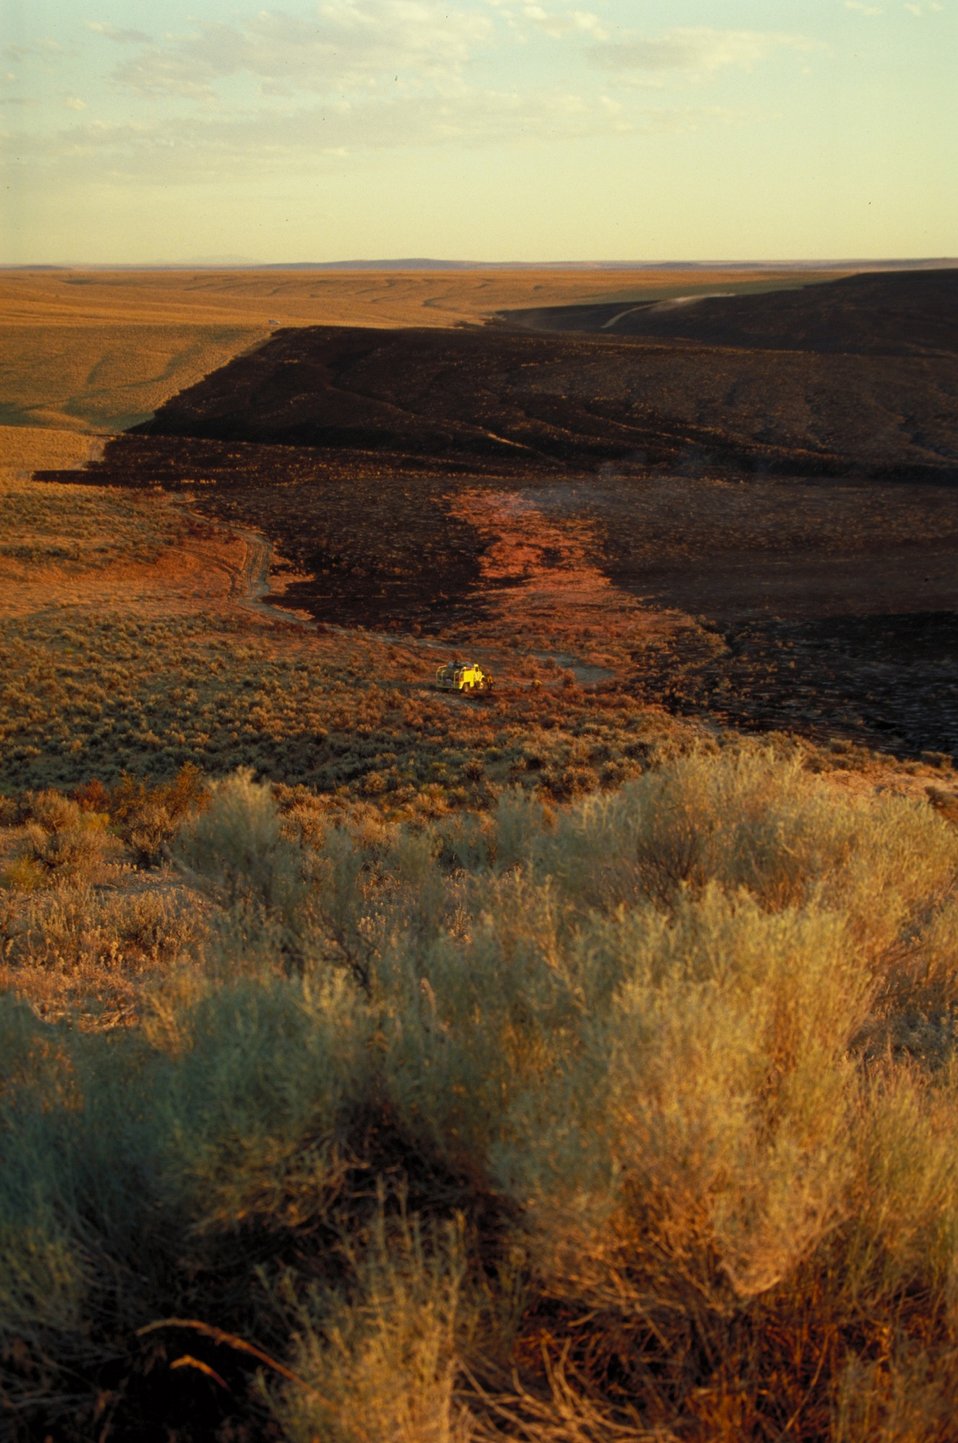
Fire line Fire Season 2000 Lower Snake River District LSRD